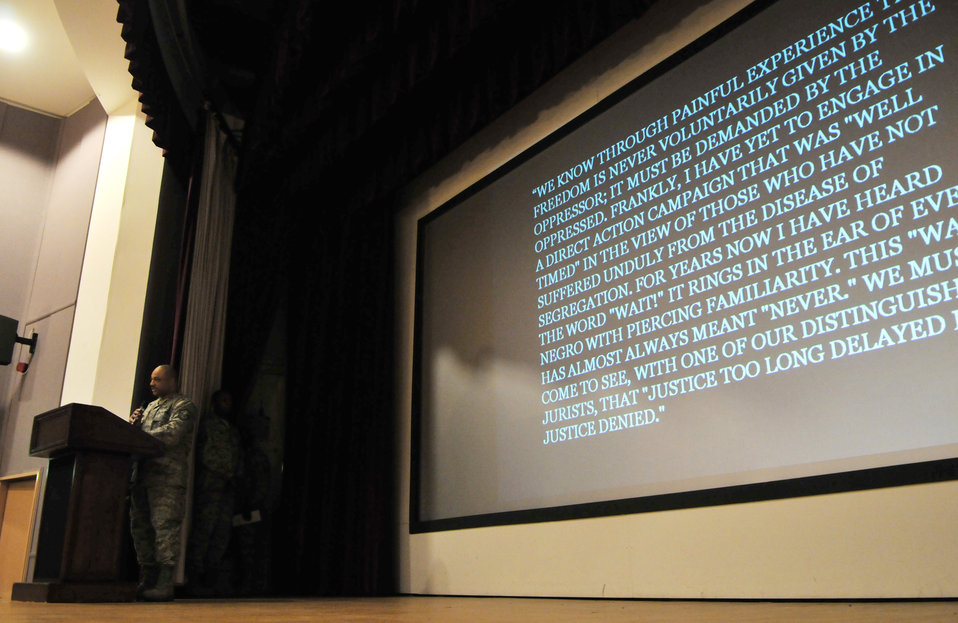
Mildenhall officials honor Martin Luther King Jr. holiday

Master Sgt. Martigo Caldwell reads part of a speech given by Martin Luther King Jr. at a presentation honoring the late civil rights activist Jan. 13, 2010 at Royal Air Force Mildenhall, England. The ceremony featured two presentations, each featuring videos and live performances highlighting Doctor King's contributions to the desegregation of the United States. Sergeant Caldwell is assigned to the 48th Force Support Squadron at Royal Air Force Lakenheath, England.